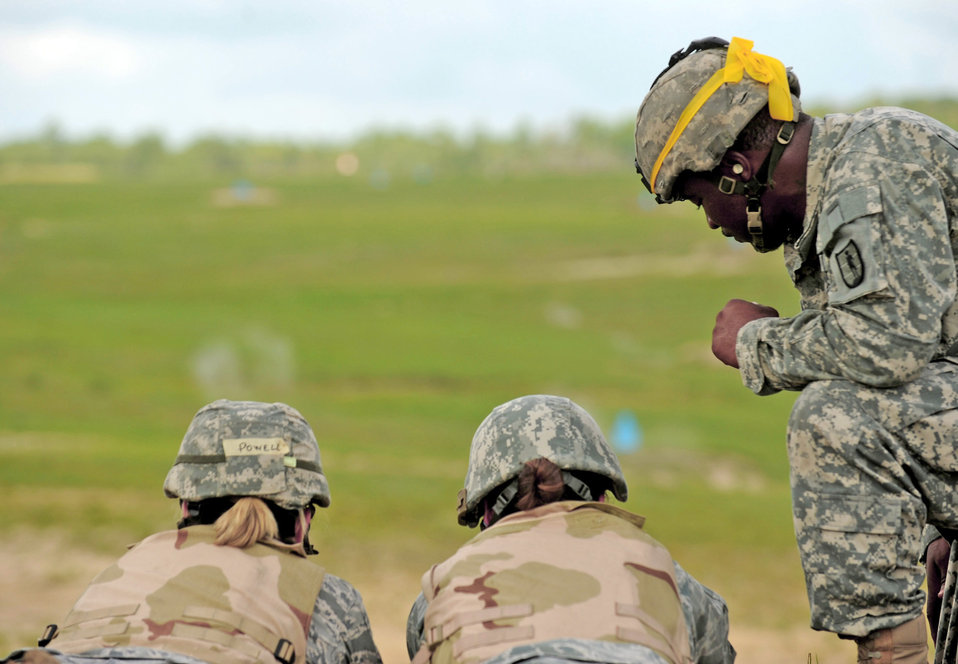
Combat weather Airmen test out new initiative

Army Staff Sgt. Edward Stokes instructs two Airmen on how to shoot the M249 machine gun during combat weather training July 16 at Camp Blanding, Fla. The Airmen are participating in a 30-day course with Air Force and Army instructors. Sergeant Stokes is assigned to the 211th Regiment, Regional Training Institute.